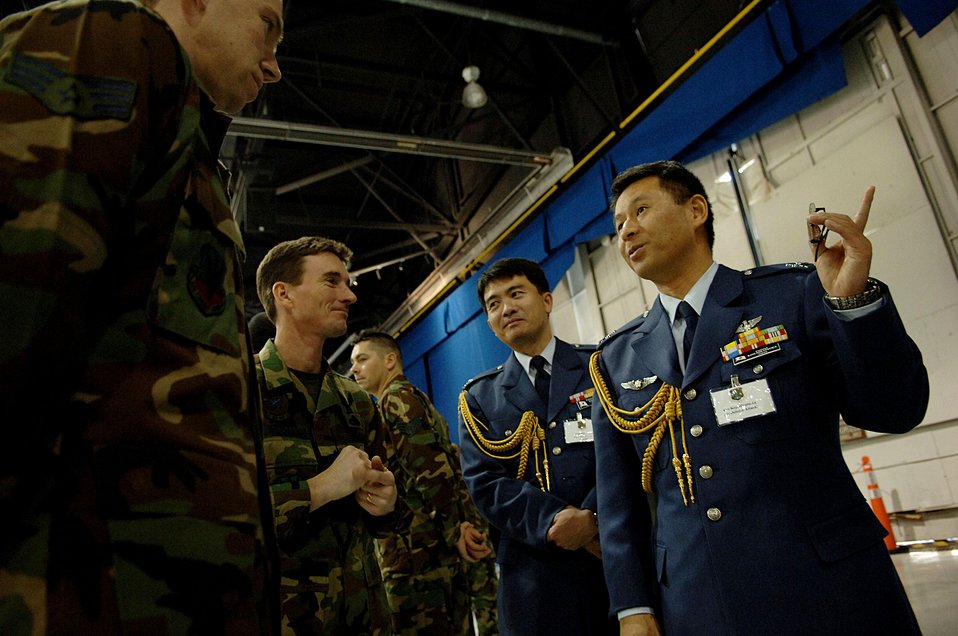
Raptor showcased for Japanese

Senior Airman Matthew St. John and Master Sgt. Donald Bishop discuss F-22 Raptor capabilities with Lt. Col. Ichiro Sato and Col. Koji Hirasuka during a press conference Jan. 31 at Langley Air Force Base, Va. Colonels Sato and Hirasuka are Air Defense Attache's with the Japanese Embassy in Washington D.C. Airman St. John is an avionics specialist with the 27th Fighter Squadron. Sergeant Bishop is a low observables specialist with the 1st Equipment Maintenance Squadron.